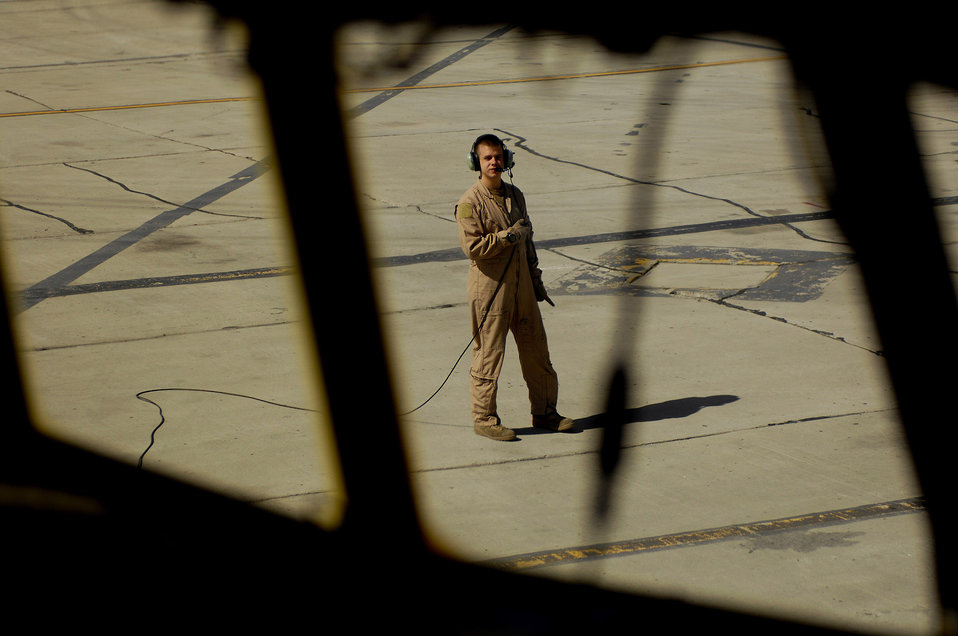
Delivering the goods

Staff Sgt. Brian Kinner monitors the engine start on a C-130 Hercules preparing for an Operation Enduring Freedom mission April 16 at Bagram Air Base, Afghanistan. Sergeant Kinner is a loadmaster assigned to the 774th Expeditionary Airlift Squadron and deployed from the 105th Airlift Squadron from Nashville, Tenn.